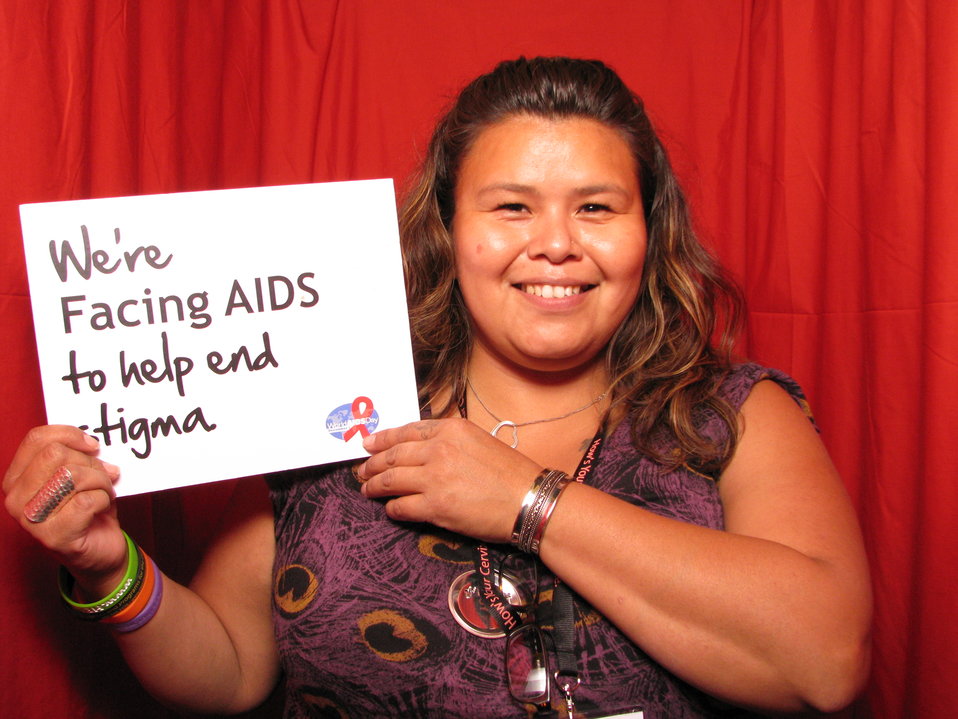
We're FACING AIDS to help end stigma.

From the AIDS.gov photo booth at the U.S. Conference on AIDS, September 2010 (Orlando, FL).